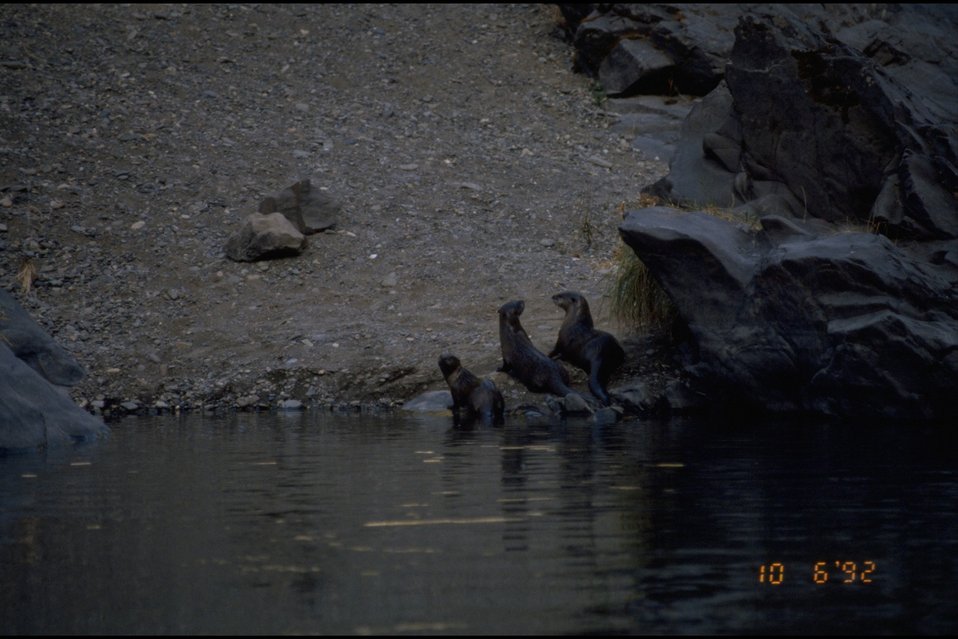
Rogue River, wild section - River Otter.